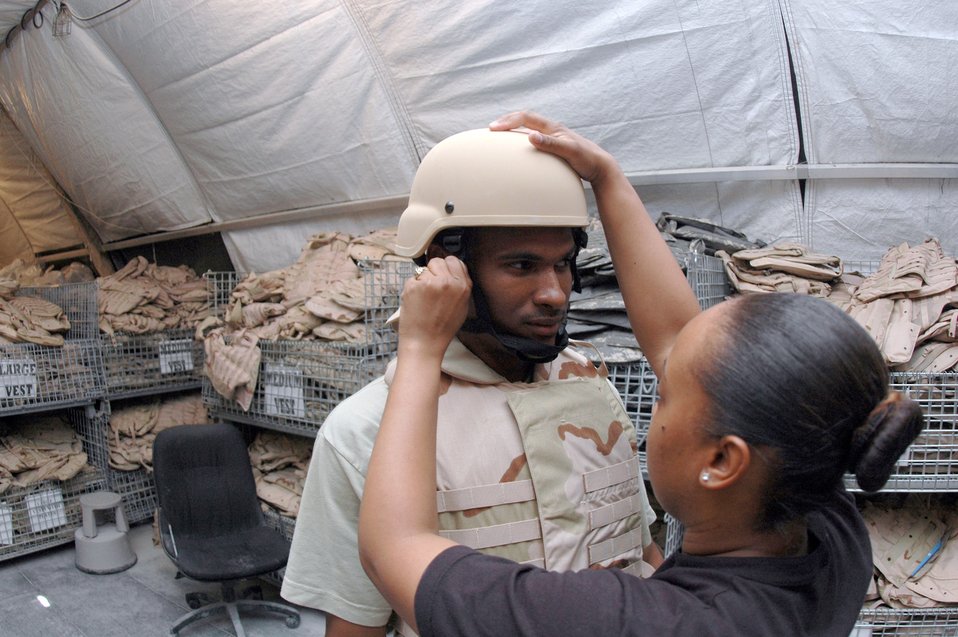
Expeditionary Theater Deployment Center equips transient Airmen

Staff Sgt. Ebonie McArthur fits a helmet for Airman 1st Class Terrence McIntosh Sept. 1 at a forward deployed locaiton in Southwest Asia. Sergeant McArthur is with the 379th Expeditionary Logistics Readiness Squadron's Expeditionary Theater Distribution Center.